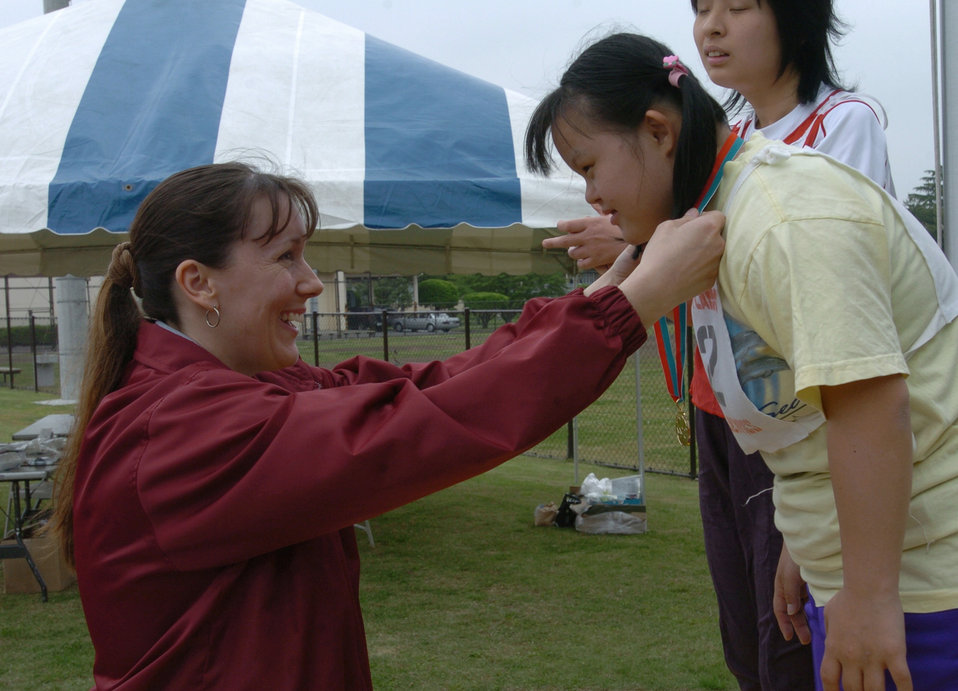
Special Olympics brings joy to Yokota volunteers

YOKOTA AIR BASE, Japan -- Tech. Sgt. Melissa Popejoy, left awards a medal to a Japanese athlete after she competed in a track and field event during the 26th Annual Kanto Plain Special Olympics here. More than 400 athletes from 20 Japanese schools competed in the two-day event May 7 and 8, which included basketball, softball throw, swimming and bowling. Sergeant Popejoy is a cargo ramp specialist with the 730th Air Mobility Squadron.